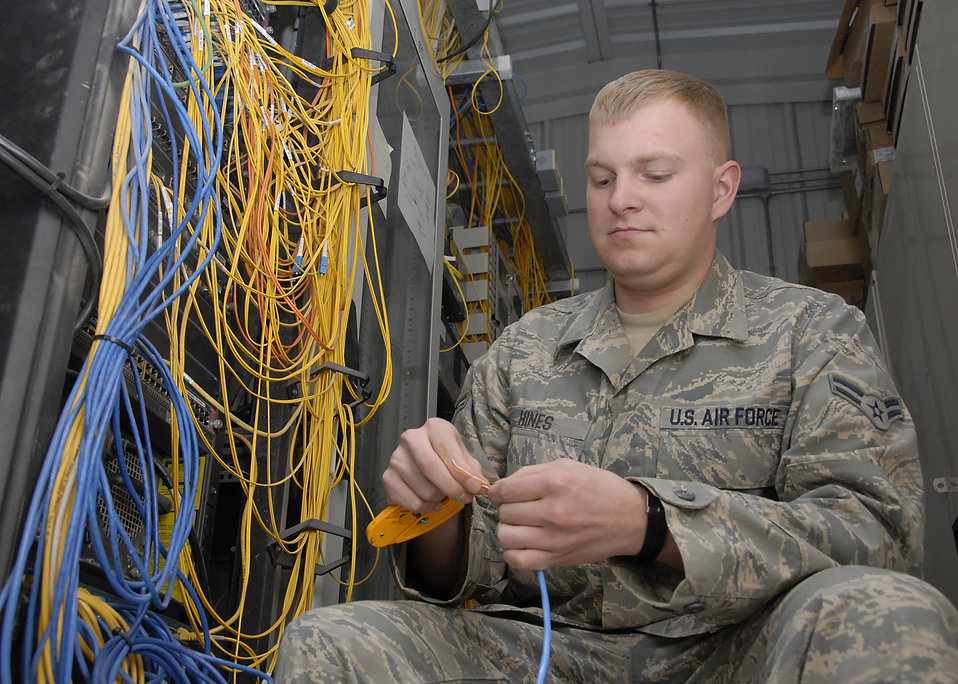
Staying connected

Airman 1st Class John Hines works to bring a computer on line to the local area network. Airman Hines is one of 17 Airmen who teamed up to improve the Oasis morale center at a base in Southwest Asia. The center provides Airmen a 24-hour operation to stay connected with family and friends back home, and to ensure their personal affairs remain in order. Airman Hines is with the 386th Expeditionary Communications Squadron.